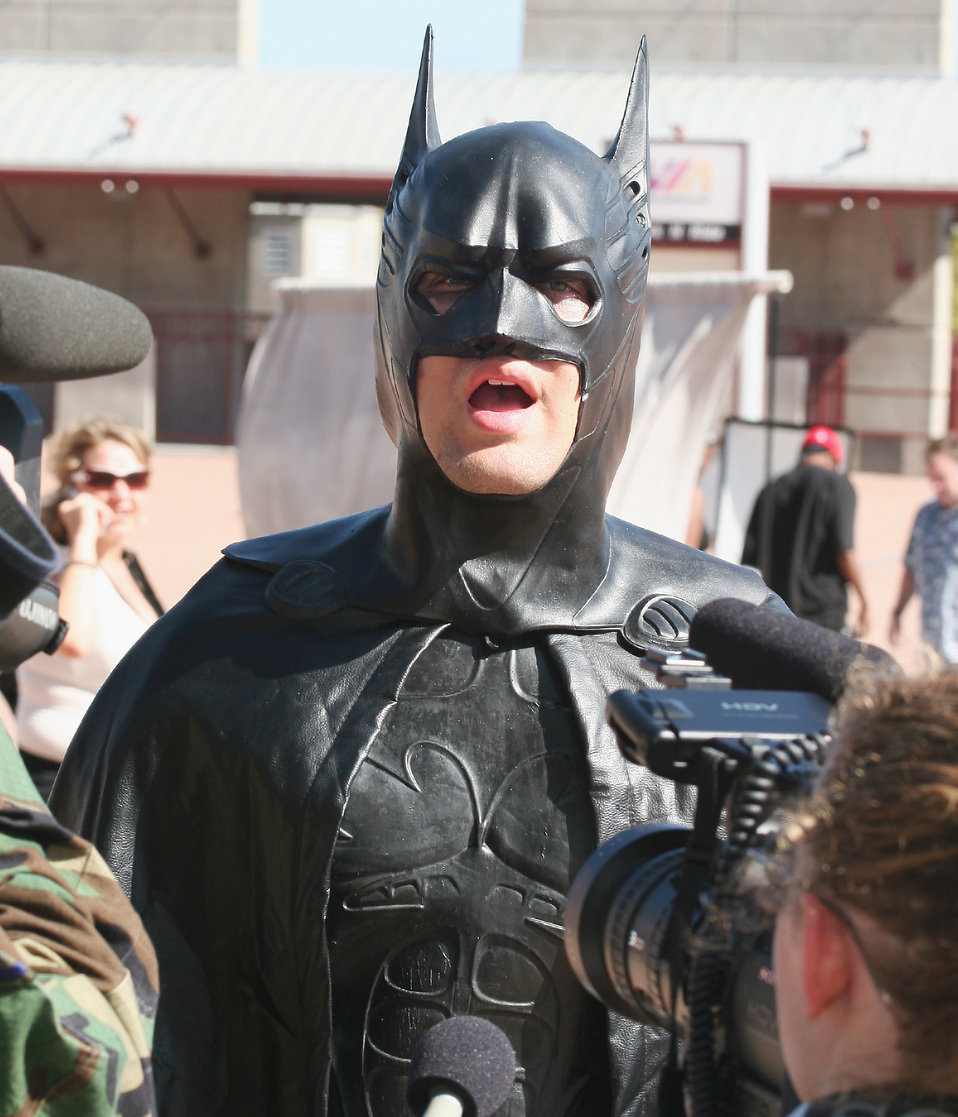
Two Alamo City Airmen vie for 'American Idol' spot

Staff Sgt. James Warren sings for the cameras moments after earning his spot in the next round of tryouts for the FOX television show